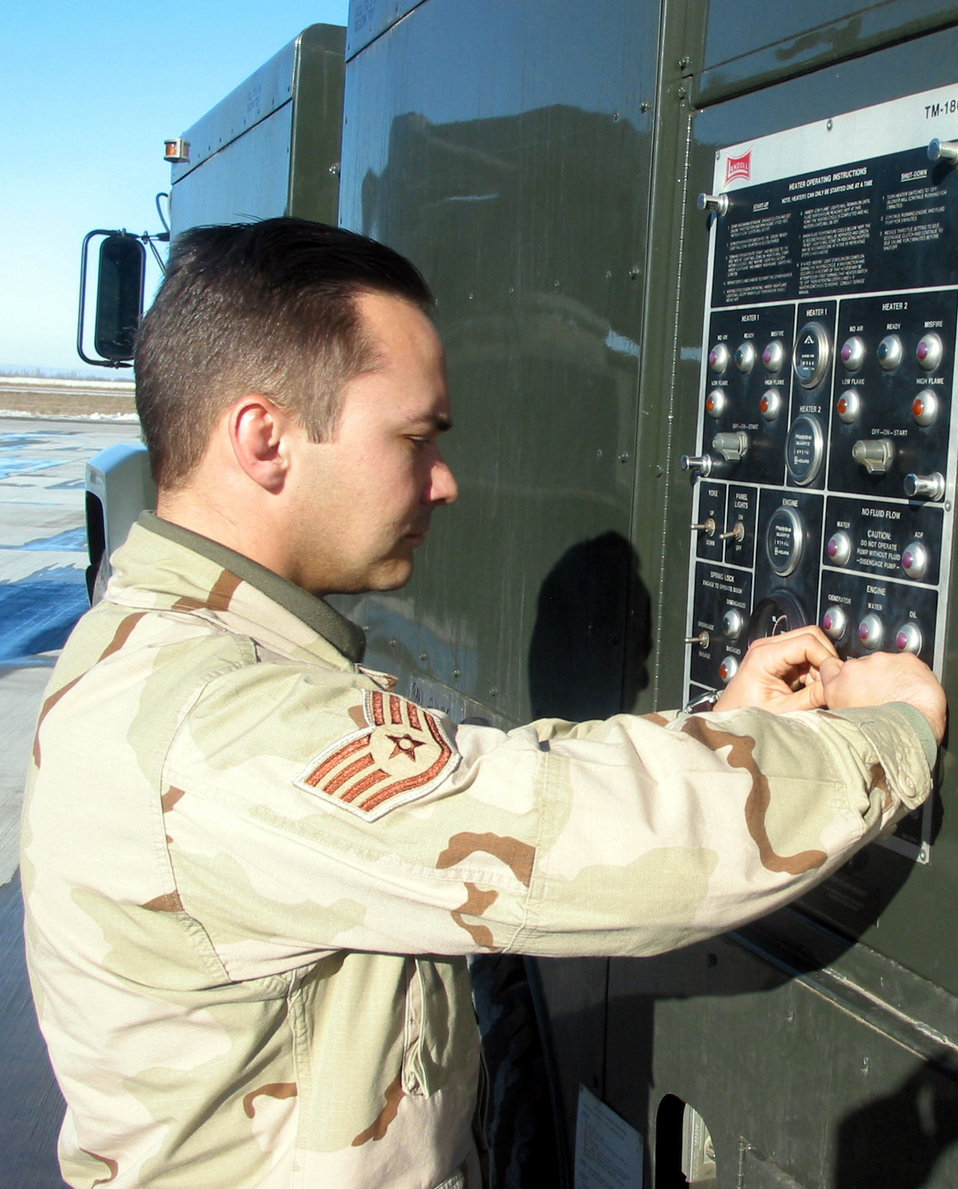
Manas' transients

MANAS AIR BASE, Kyrgyzstan -- Staff Sgt. Aaron Schutter starts the pump motor on the de-ice truck here. He is assigned to the 376th Air Expeditionary Wing's transient alert team.